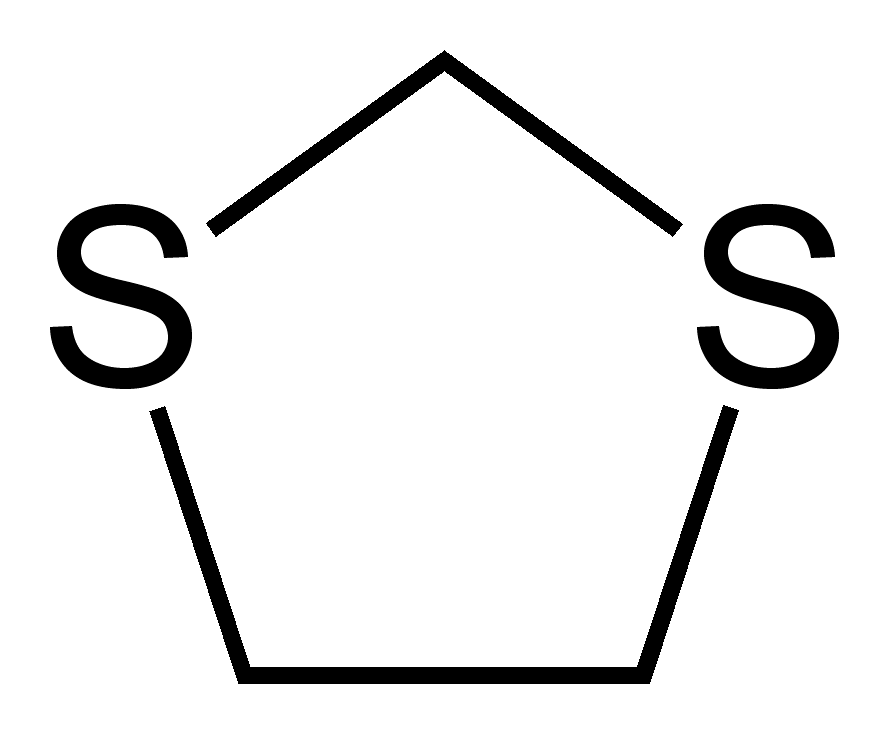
Skeletal formula of 1,3-dithiolane